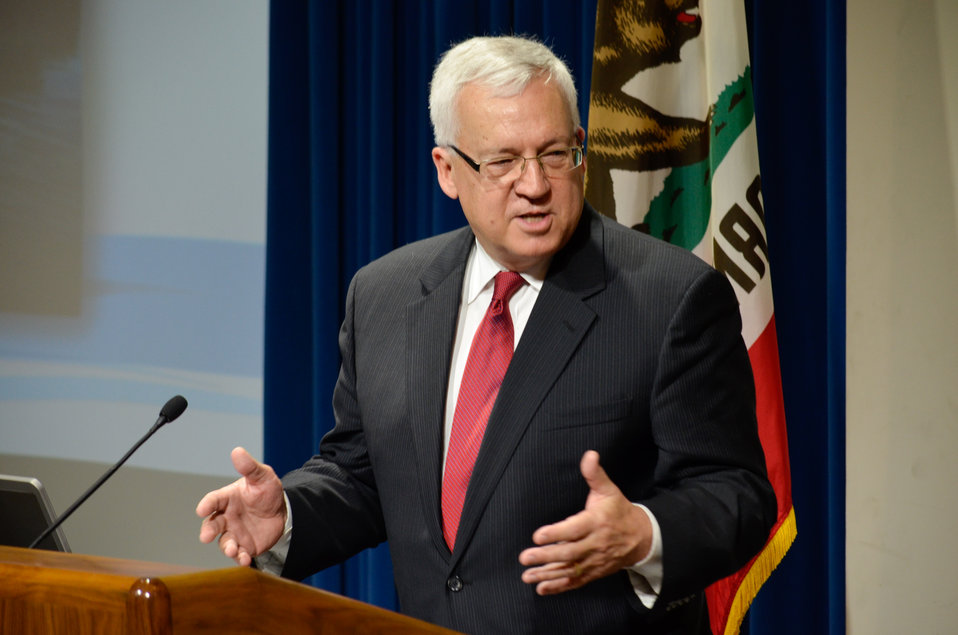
Corps civil works director at Water 360 summit

Steve Stockton, U.S. Army Corps of Engineers civil works director, addresses attendees of the Water 360 Integrated Water Management Summit in Sacramento, Calif., April 3, 2013. Hosted by the California Department of Water Resources and the California Water Education Foundation, the summit aims to advance discussion of integrated water management in California. Stockton’s remarks echoed remarks by California water leaders that both infrastructure improvements that provide ecosystem and flood risk reduction benefits are essential to reducing America’s growing flood risk. “I’m here to tell you, what we’ve been doing is unsustainable,” Stockton said. “To have a more resilient and robust society, we’re going to have to have a lot more resiliency built into our infrastructure.”